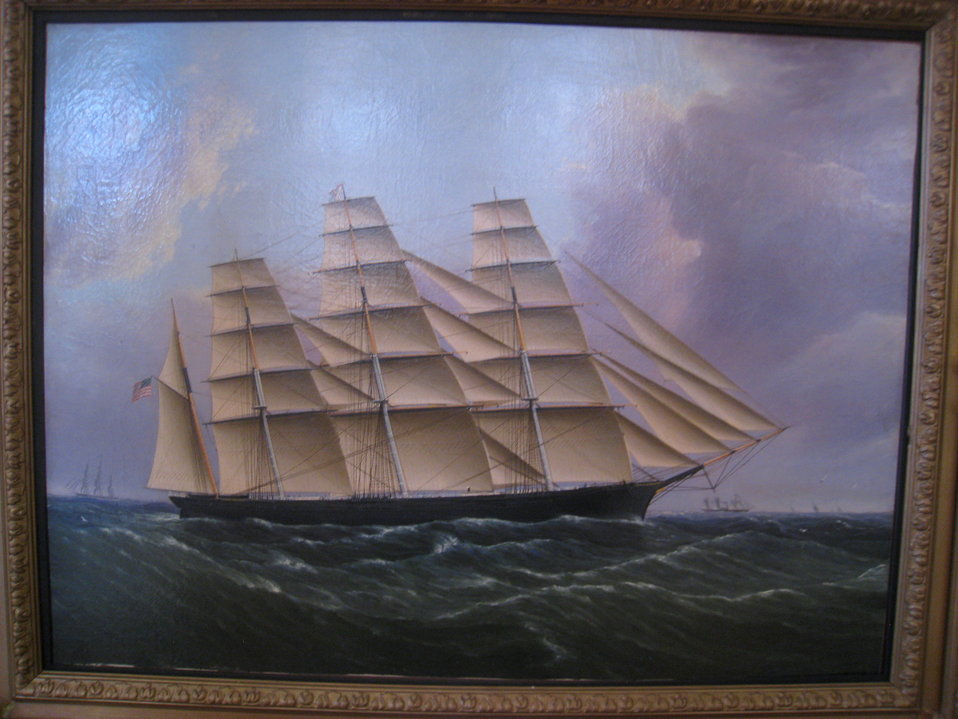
'Clipper Ship Great Republic' by James Butterworth, c. 1853 - Old State House Museum, Boston, MA - IMG 6709